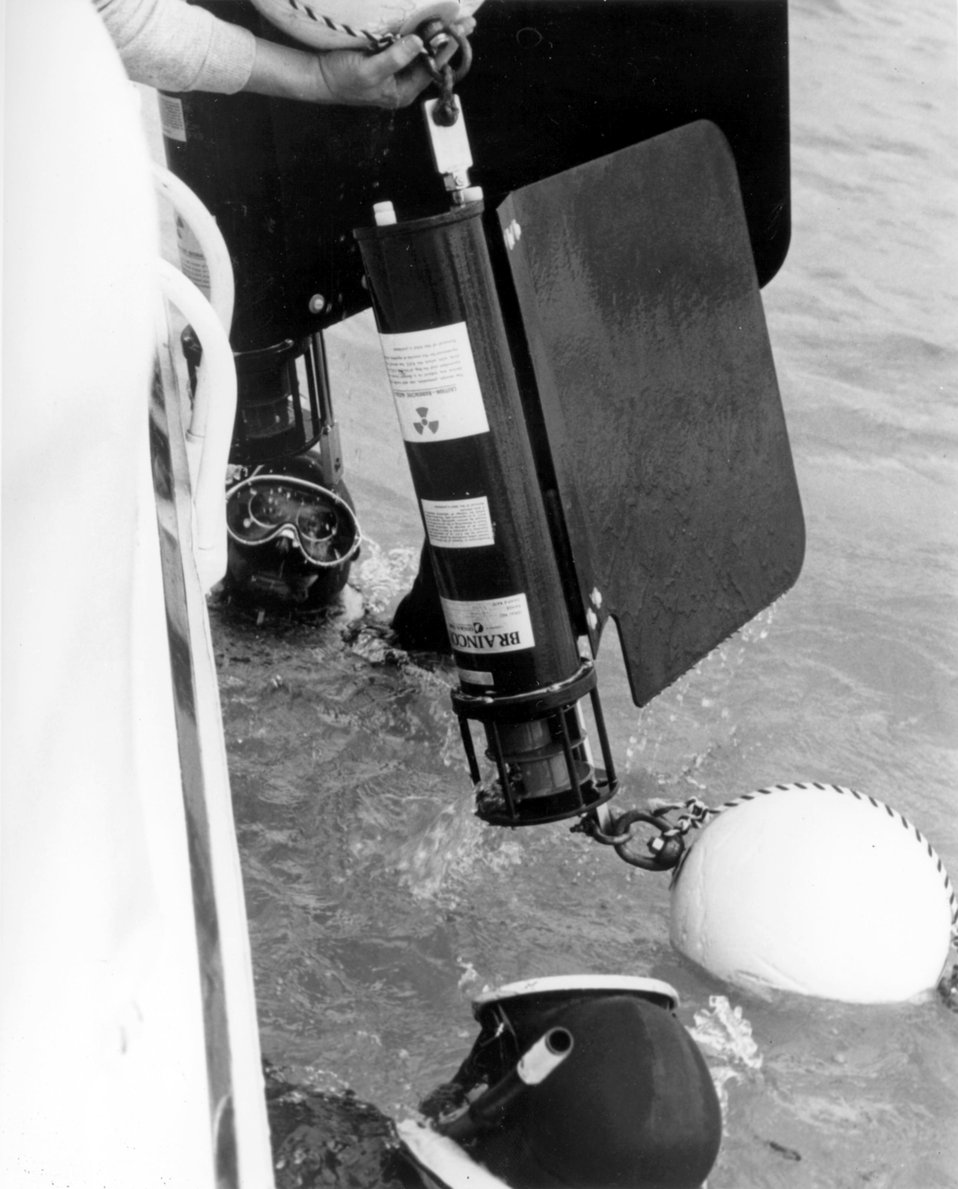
Drivers from the AEC's Argonne prepare to anchor a current meter to the bottom of Lake Michigan.
c.1972